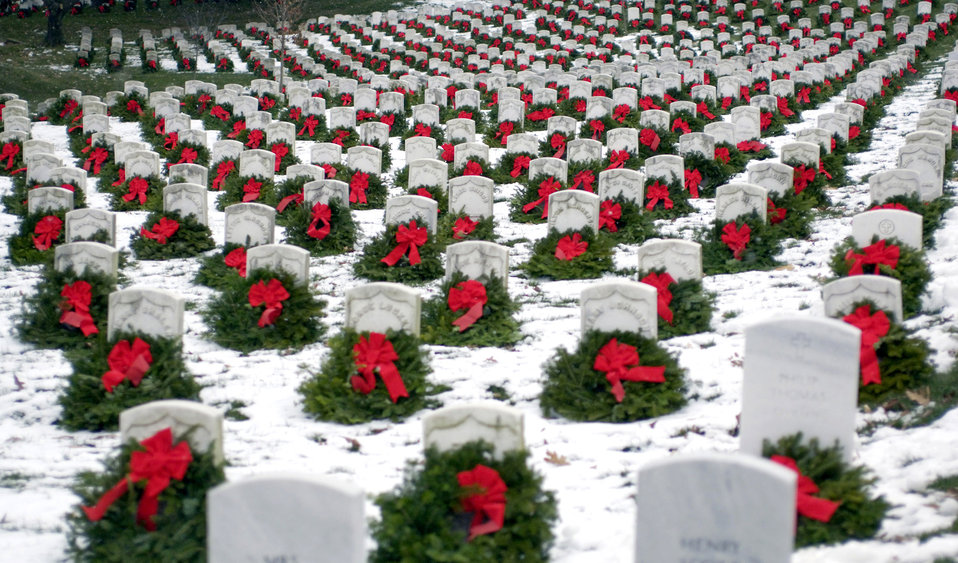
Wreaths Across America

Veterans' memorials and gravesites across the nation will be adorned with remembrance wreaths on Dec. 15 through a program known as Wreaths Across America. Some 32,144 wreaths are scheduled to be placed in cemeteries and memorials on that day.